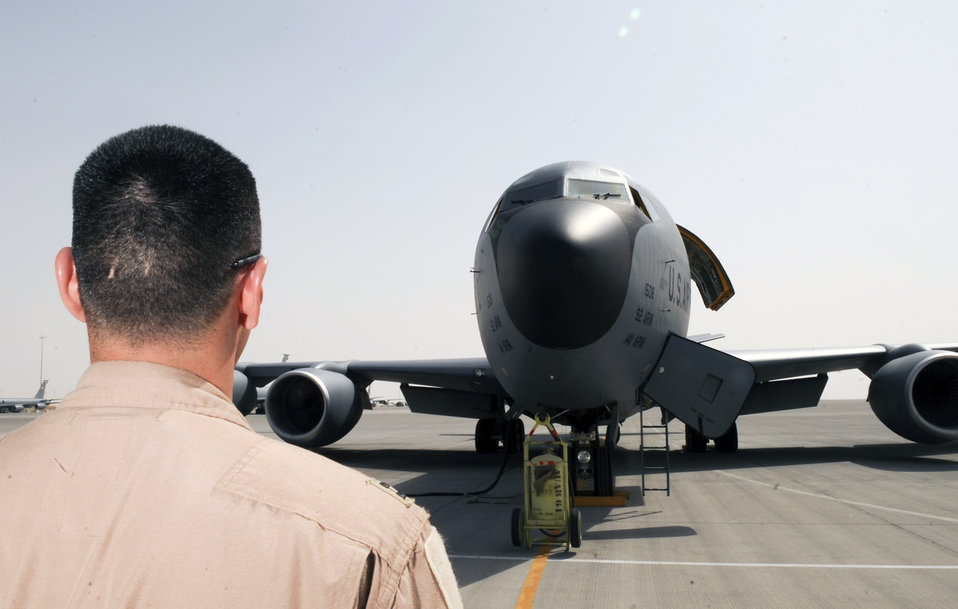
Refuelers keep mission soaring

Capt. Andrew McLay, a pilot with the 340th Expeditionary Air Refueling Squadron at an air base in Southwest Asia, does a walk-around to check out the overall exterior of a KC-135 Stratotanker as part of his preflight check prior to refueling mission.